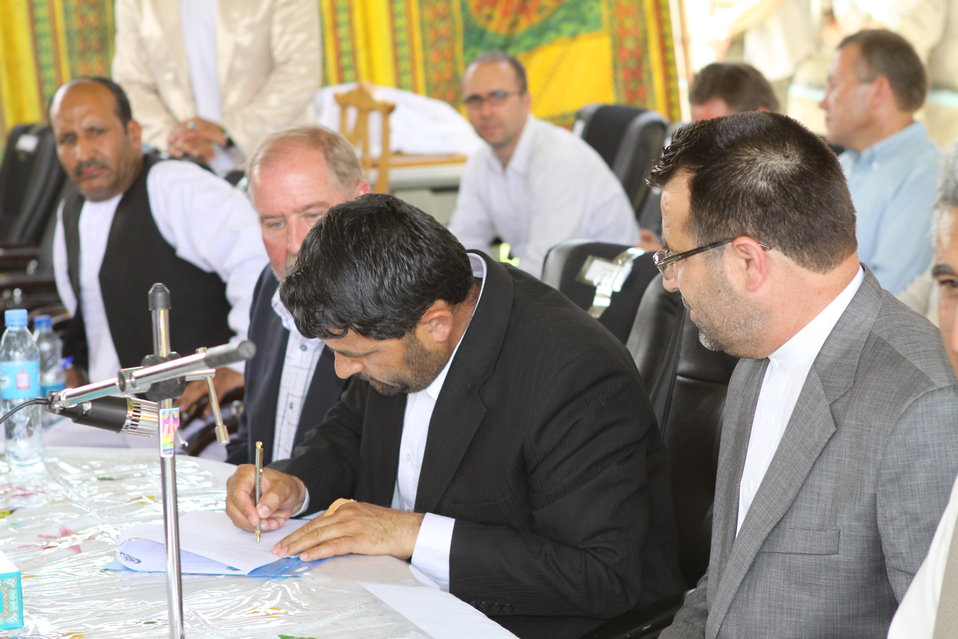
Bolan Poultry Farm